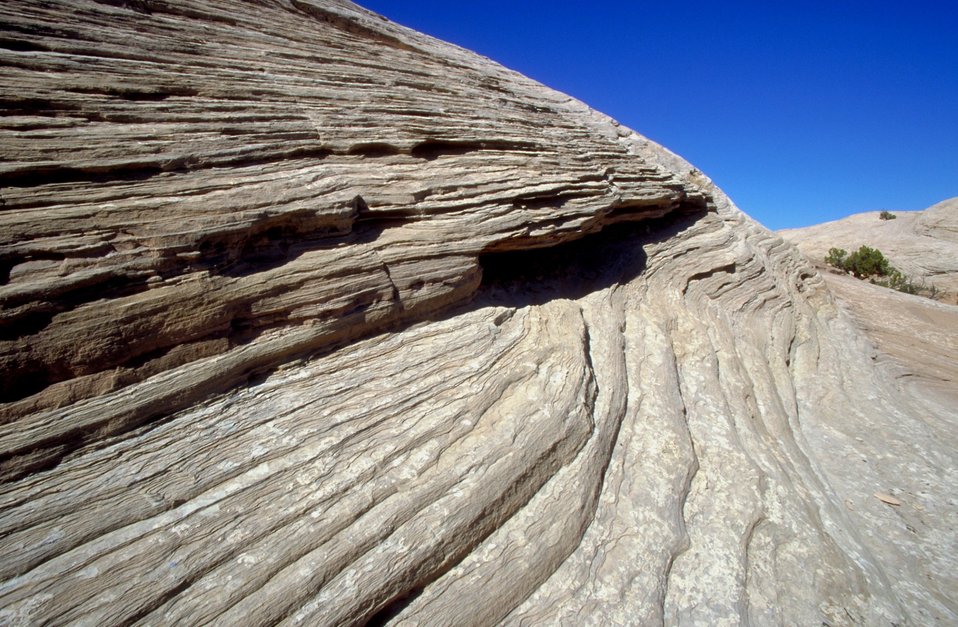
Slickrock near head of Spring Canyon near Moab, Utah.